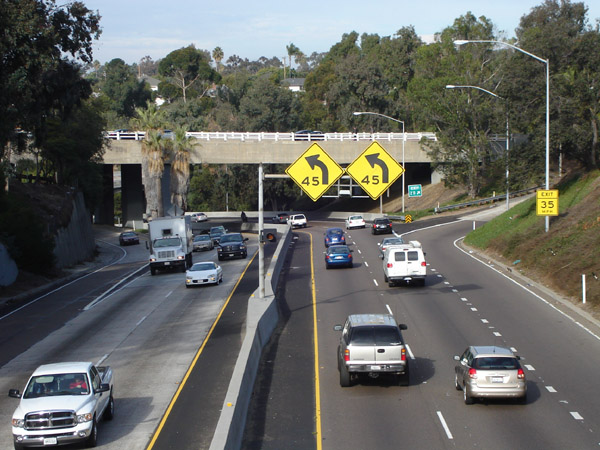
State Route 163 in San Diego facing north from the University Ave overpass exiting Balboa Park. Copyright: Taken by myself and release to the public domain. This is also available on http://www.davidphogan.com/sdroads